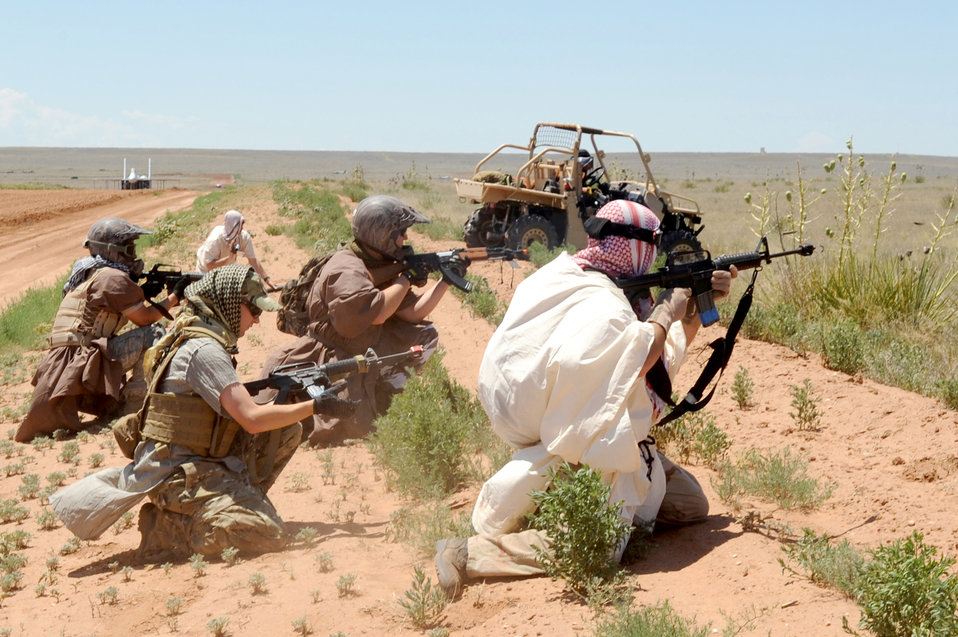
Cannon capabilities exercise

Opposition forces members fire at friendly forces members during a capabilities exercise June 26, 2010, at the Melrose Range near Cannon Air Force Base, N.M. The exercise gave insight about the 27th Special Operations Wing's mission for base employees and their families.